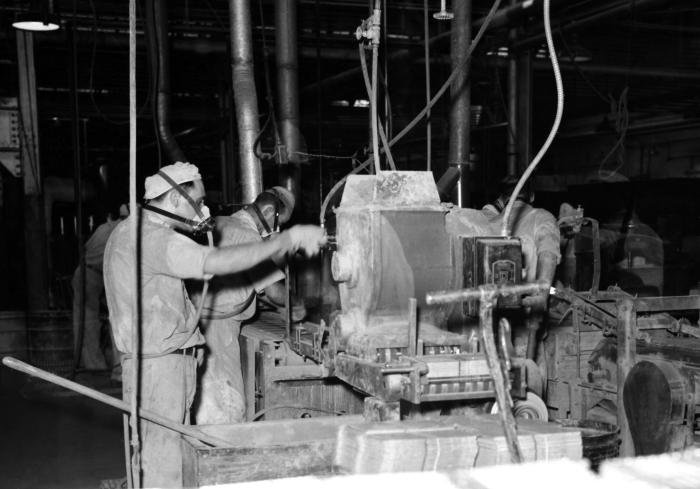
Published in the 'Public Health Bulletin', No. 262, 1941, this historic image, which was provided by the Center for Disease Control's (CDC), National Institute for Occupational Safety and Health (NIOSH) depicted a battery factory in which workers were in the process of assembling storage batteries. These men were stationed at a 'pasting' machine where they would paint the lead dioxide (PbO2) on to the cathode of the lead batteries. As a device containing both lead, a toxic heavy metal, and acid, in the form of sulfuric acid, batteries are potentially dangerous, both in their finished state, as well as during their manufacture. Precautions need be taken when building a battery, including the use of goggles, gloves, and filtered breathing devices. These workers were wearing filtered masks and gloves, but were without goggles, which would have prevented accidental splashes into their eyes.